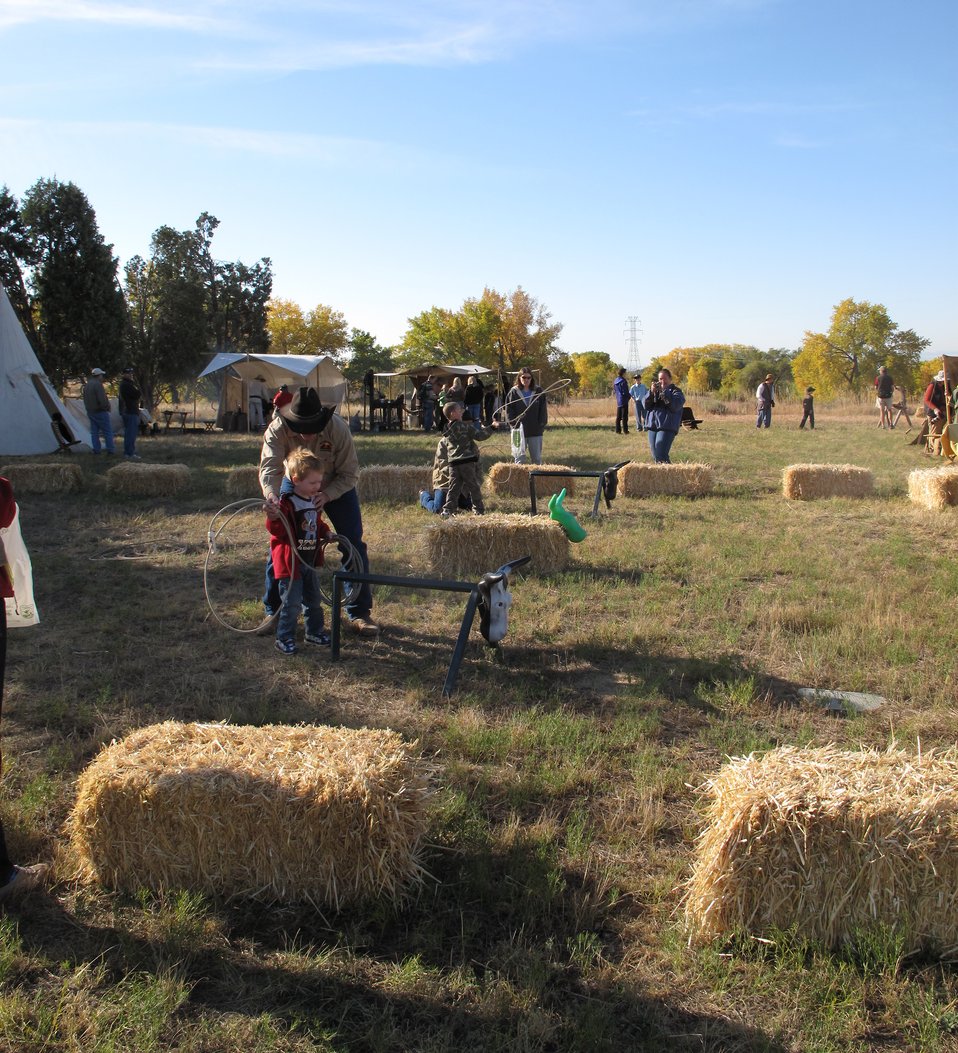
Colonial Style

Cowboys teaching the kids how to lasso a cow.